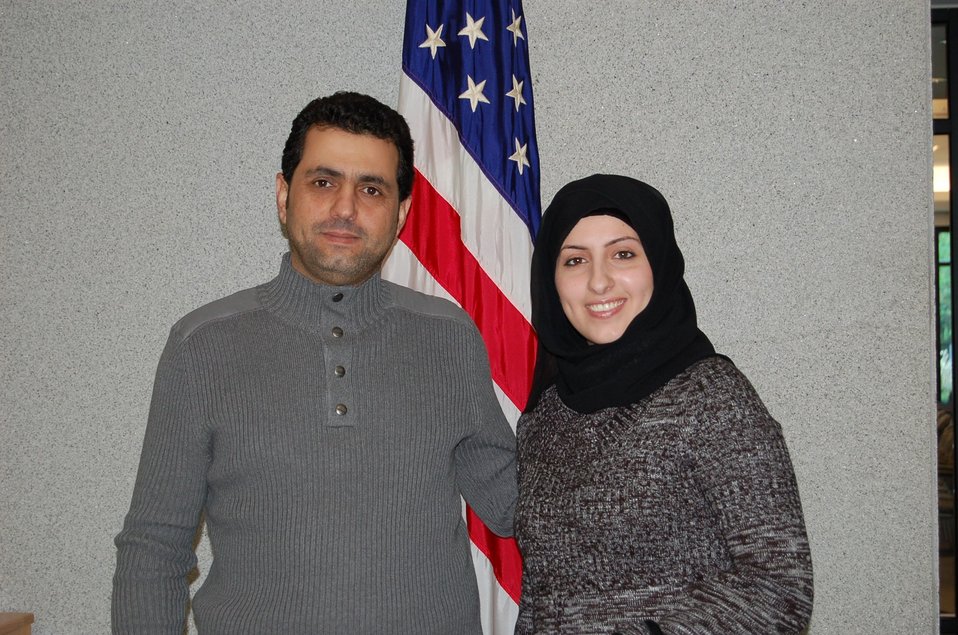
New Citizens